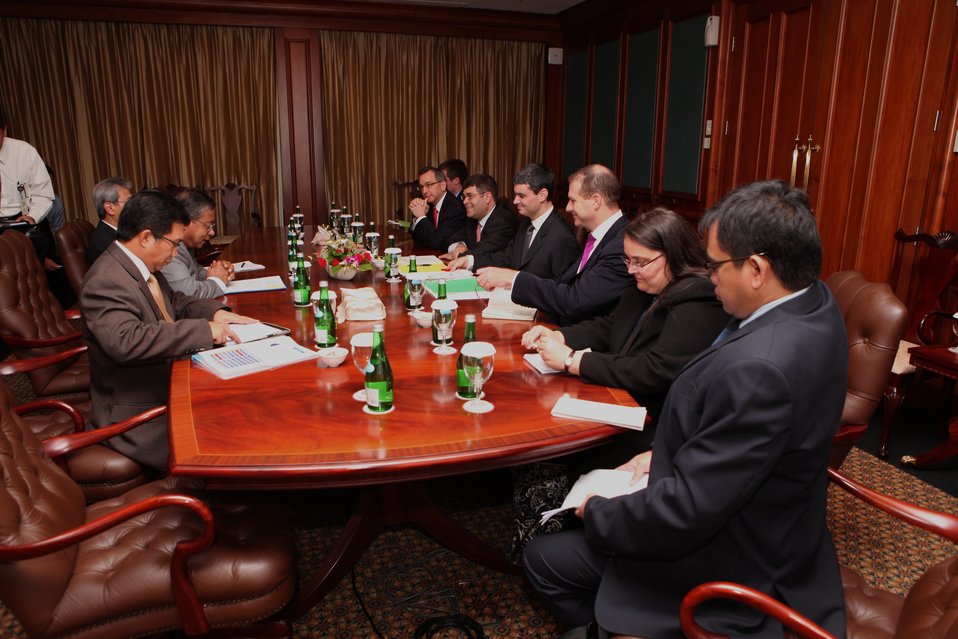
Deputy Secretary Wolin's Trip to the Pacific Rim

On Thursday, May 19, 2011, Deputy Secretary Neal Wolin met at Bank Indonesia with Indonesia's Central Bank Governor Darmin Nasution.